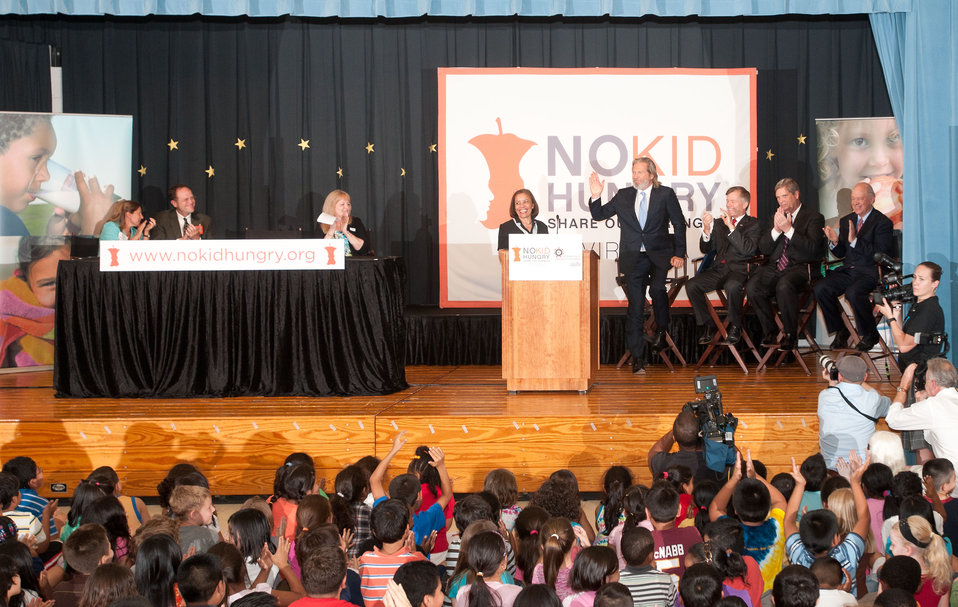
Barcroft Elementary School Principal Miriam Hughey-Guy (center), introduces Academy Award Winner and No Kid Hungry National Campaign Spokesperson Jeff Bridges and the room erupts in applause during the launch of the Virginia No Kid Hungry Campaign at the Arlington, VA, school on Tuesday, June 7, 2011.